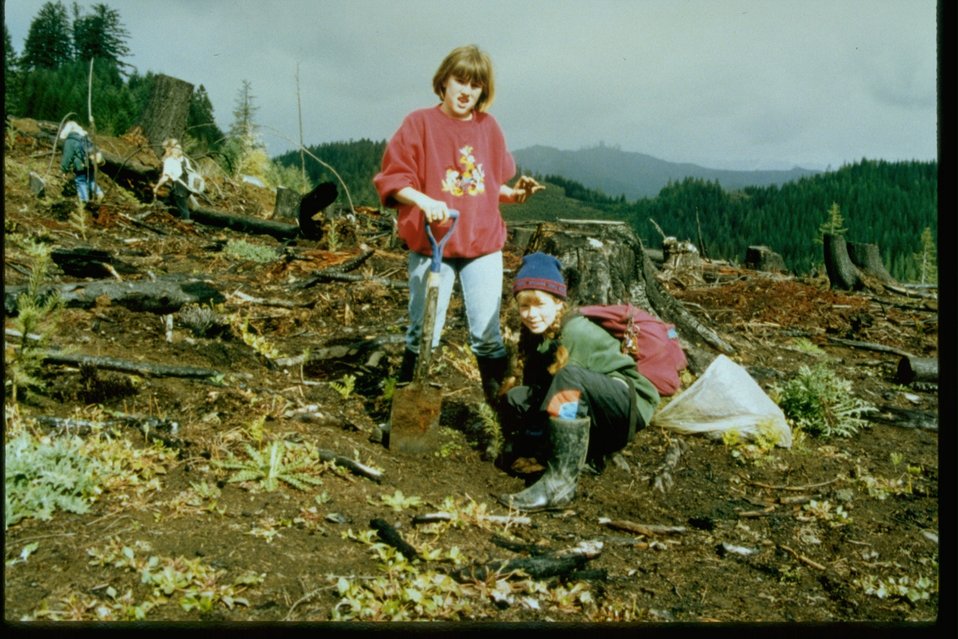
Lower Umpqua Treeplanting.